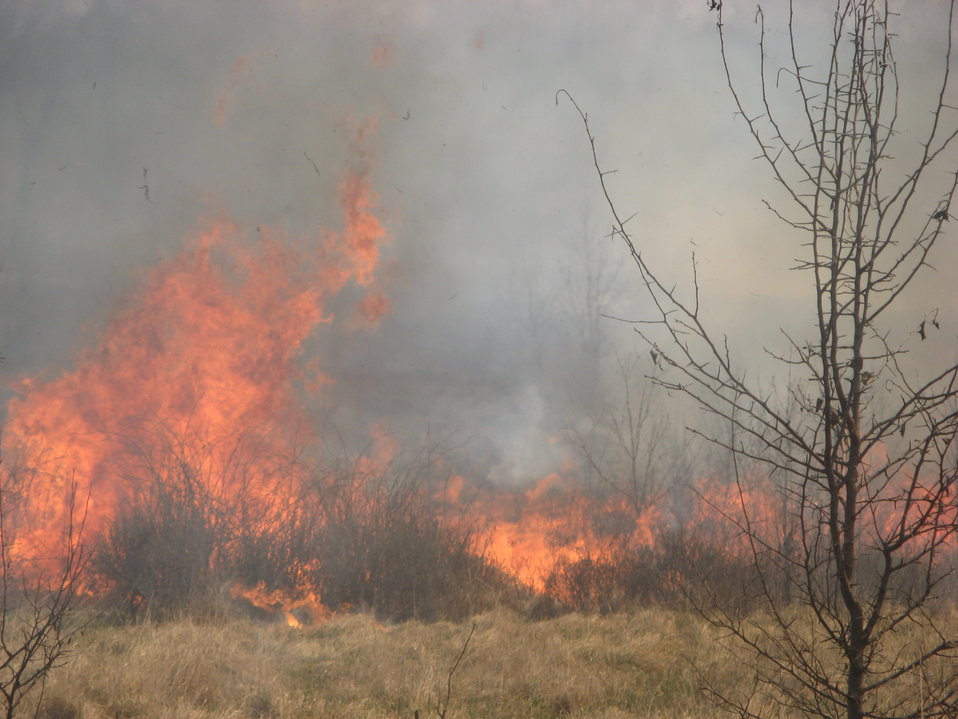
Controlled burn in grassland

Laurel, MD: A prescribed fire burns at Patuxent National Research Refuge. Despite being near the Baltimore/Washington Parkway, this burn caused no smoke impacts because fire managers carefully selected wind conditions that would carry smoke away from the highway.